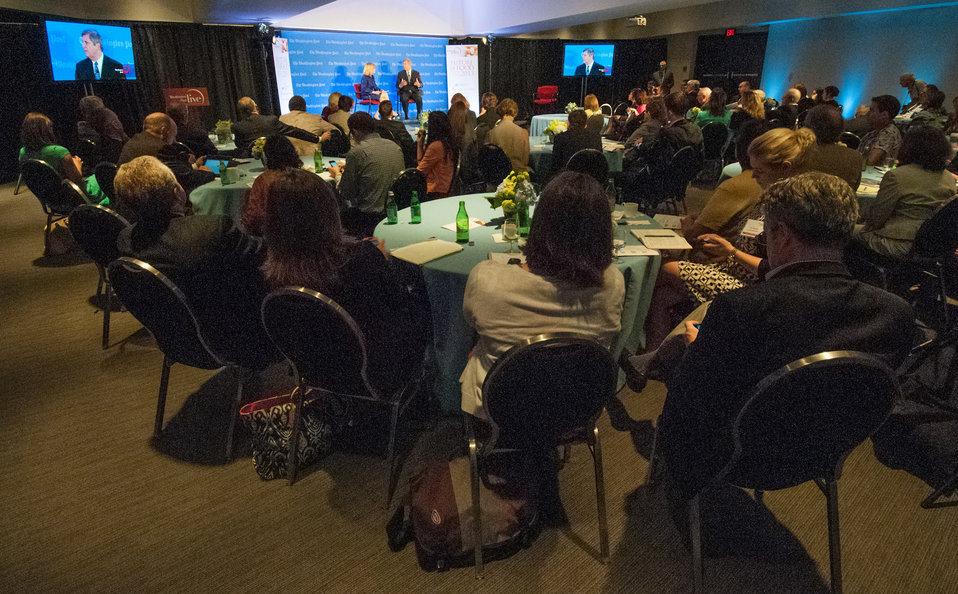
Washington Post Live Editor Mary Jordan Live and Agriculture Secretary Tom Vilsack along with leading agricultural and nutrition experts discuss expanding healthy, sustainable food systems during the annual live forum, “Future of Food: Building a Sustainable Food System 2013,” sponsored by the Washington Post in Washington, D.C. on Wednesday, May 22, 2013. The discussion included public-private partnerships, the market’s role in nutrition and the future of agricultural innovation.